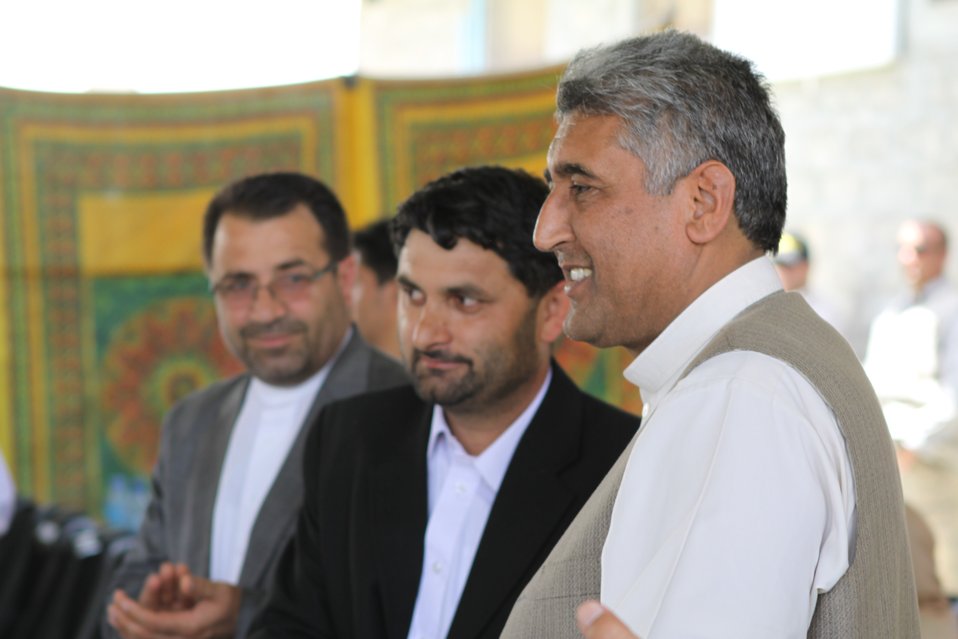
Bolan Poultry Farm